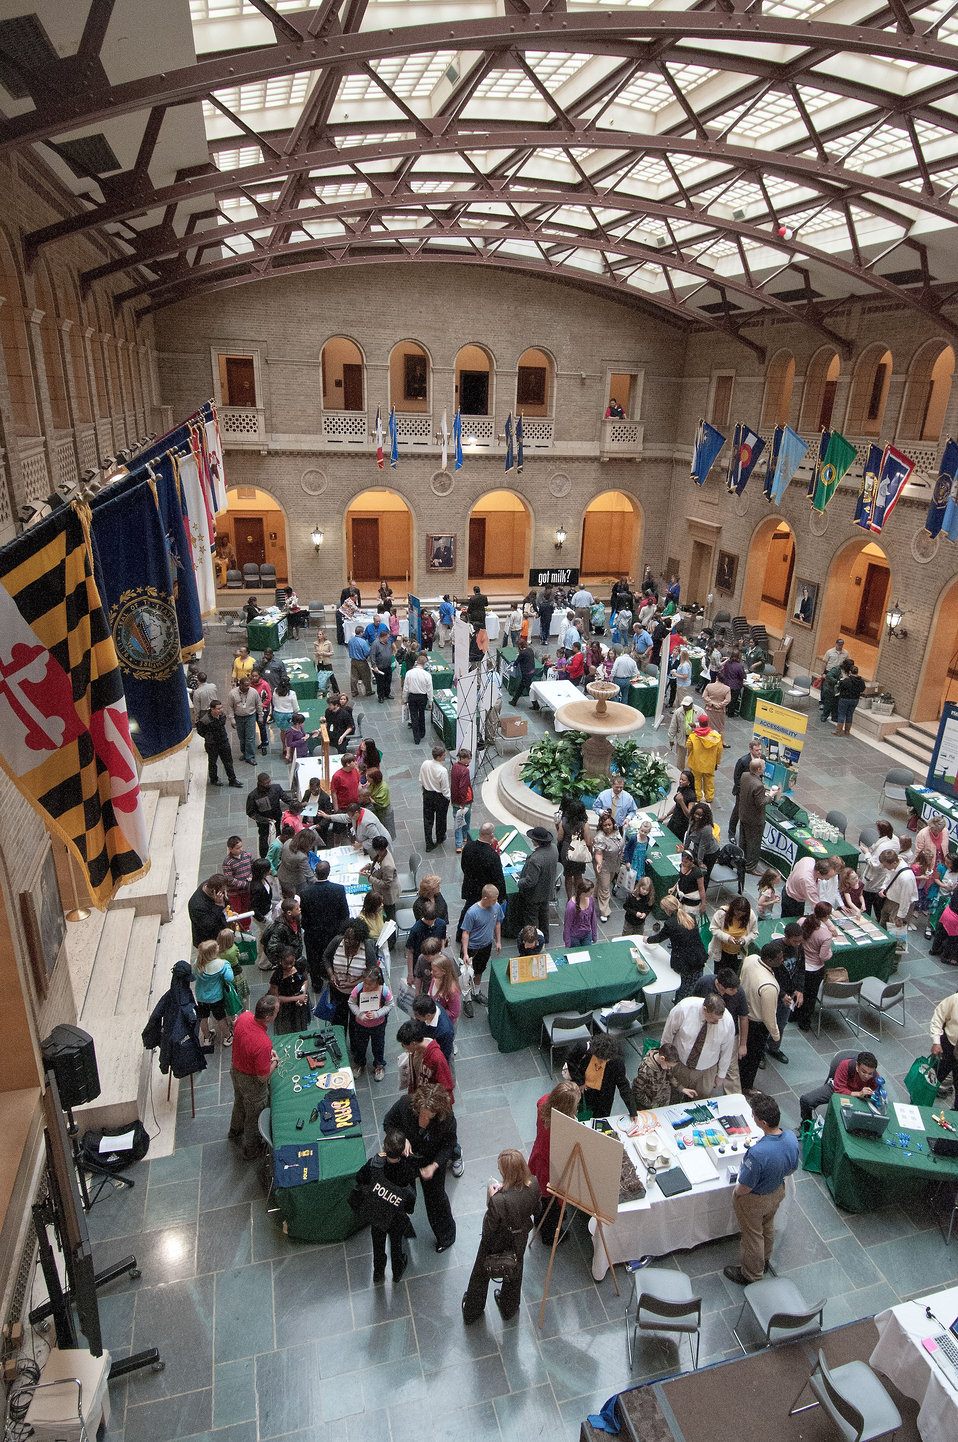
The United States Department of Agriculture sponsored the Take Our Daughters and Sons to Work and Earth Day in Washington, D.C., on Thursday, April 26, 2012. The exhibits showcased USDA programs associated with soil and water conservation, alternative and bio-energy.